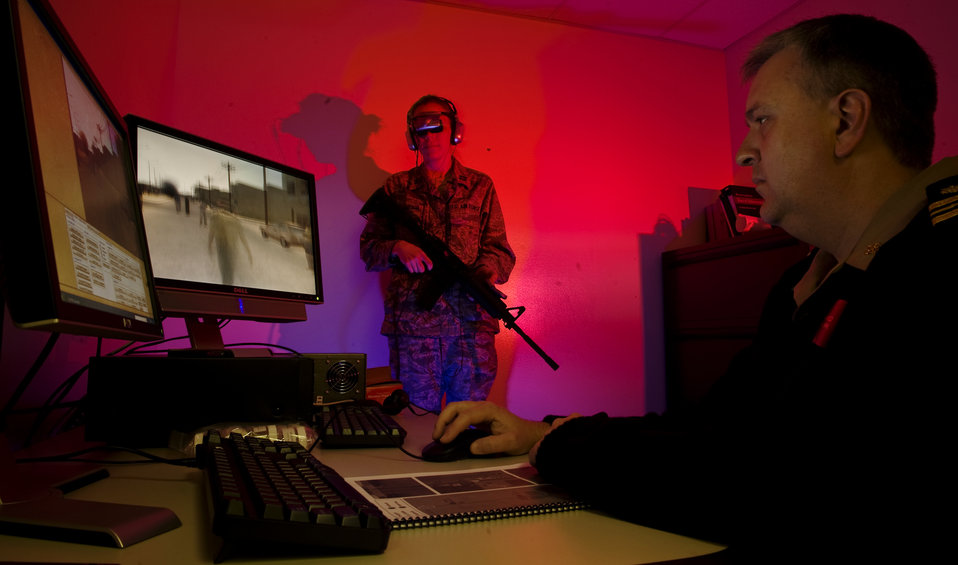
AF doctors use virtual reality to treat PTSD

Captain Heather Bautista (standing) and Lieutenant Commander William Satterfield, checks the operation of a virtual reality software for returning veterans with combat post traumatic stress disorder at the David Grant USAF Medical Center at Travis Air Force Base, Calif., April 17. Capt. Bautista, U.S. Air Force and LCDR. Satterfield, U.S. Public Health Service are assigned to the center's mental health clinic.